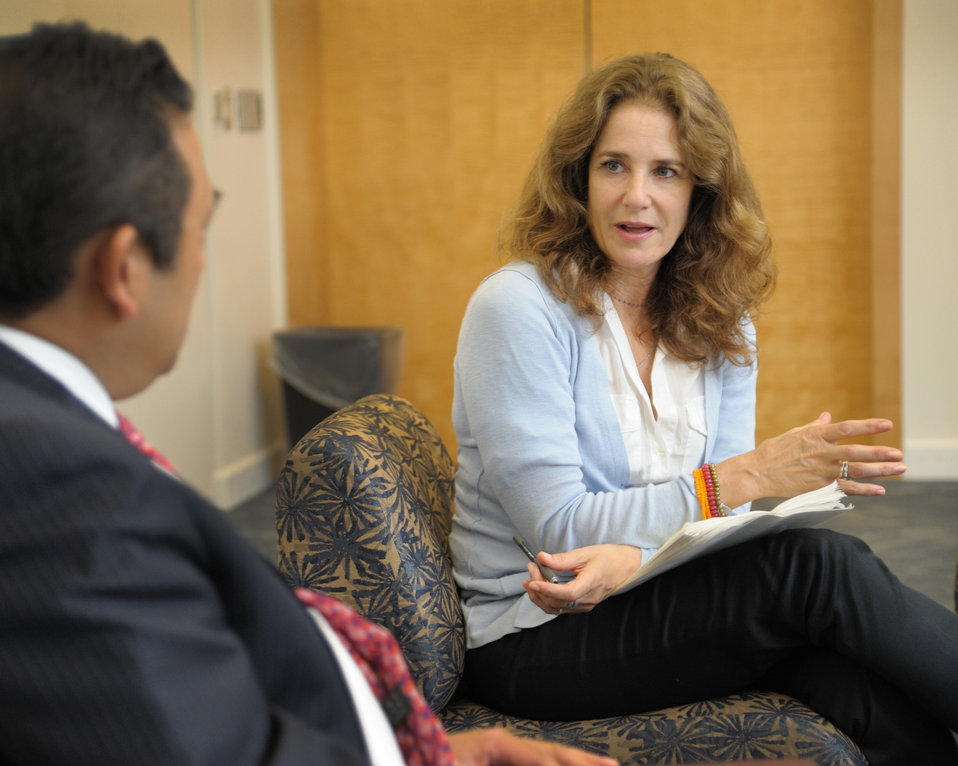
APP6 - NIH Aug 2011

Actress Debra Winger and Mr. David Mineta (Deputy Director of Demand Reduction, White House Office of National Drug Control Policy) speak prior to NIDA’s Addiction Performance Project, held Aug 5, 2011 on the NIH Campus